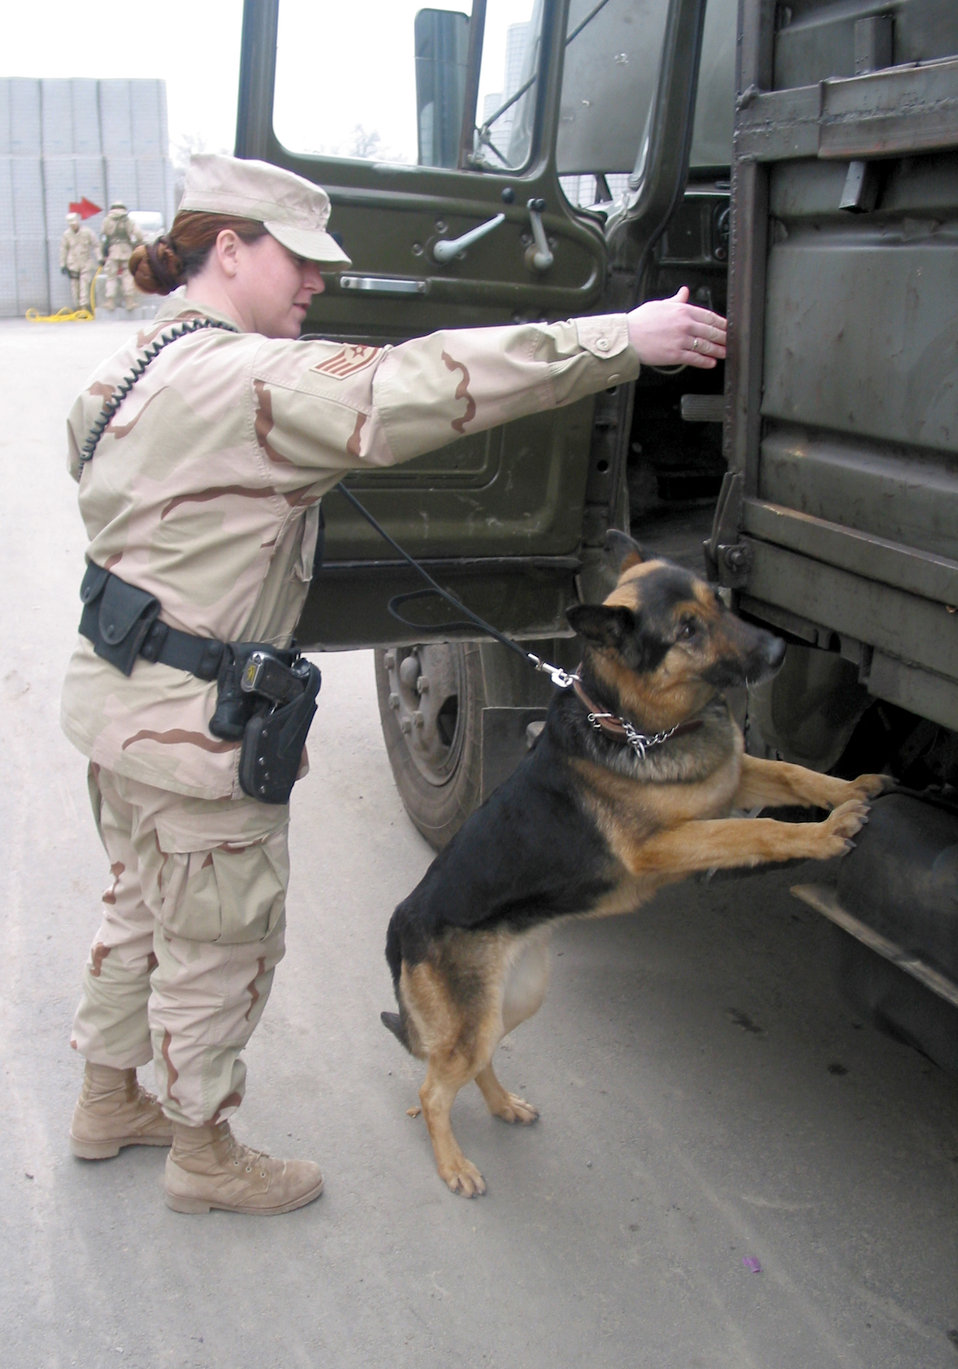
Dogs help secure base

MANAS AIR BASE, Kyrgyzstan -- Staff Sgt. Kelly Minnix and Houby, a military working dog, check a vehicle for explosives before entering the base. Sergeant Minnix is a dog handler with the 376th Expeditionary Security Forces Squadron. When not biting perps, Houby dispenses advice to the troops through a column in the base paper.